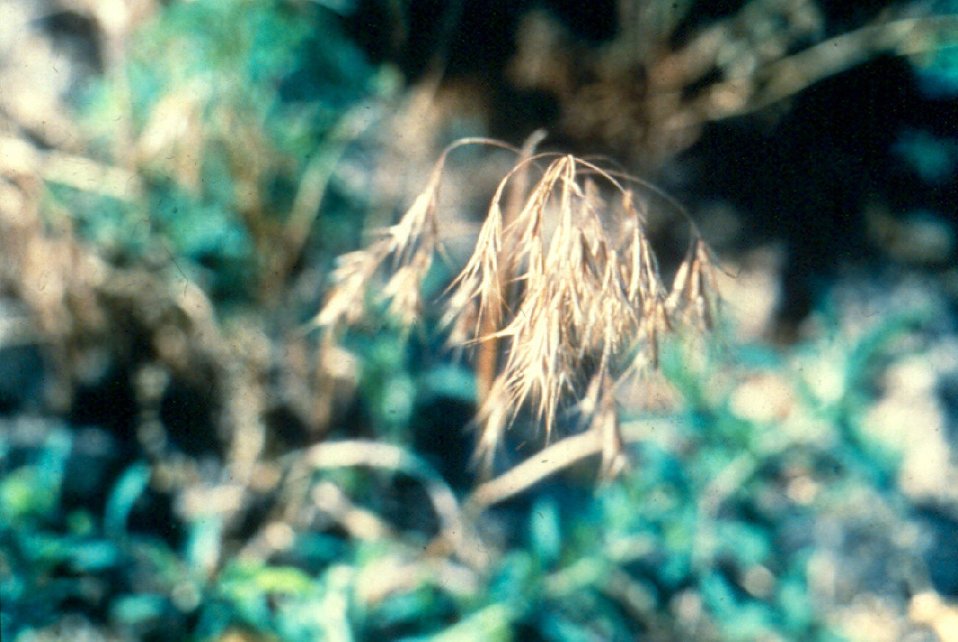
Cheat Grass Salmon FIeld Office UCSC Upper Columbia Salmon Clearwater District